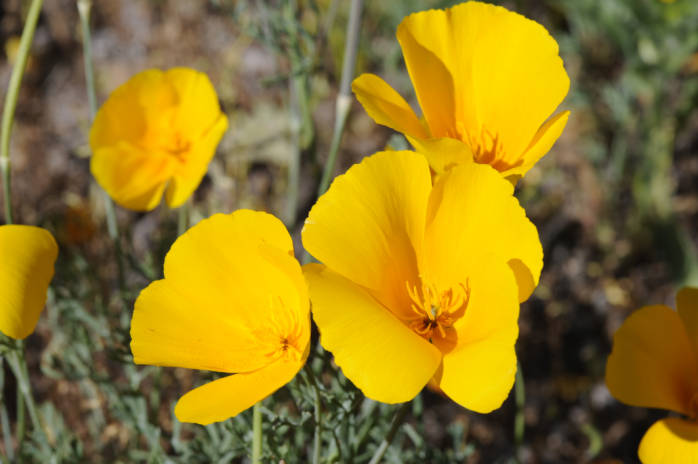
Mexican golden poppy

Cabeza Prieta National Wildlife Refuge, AZ